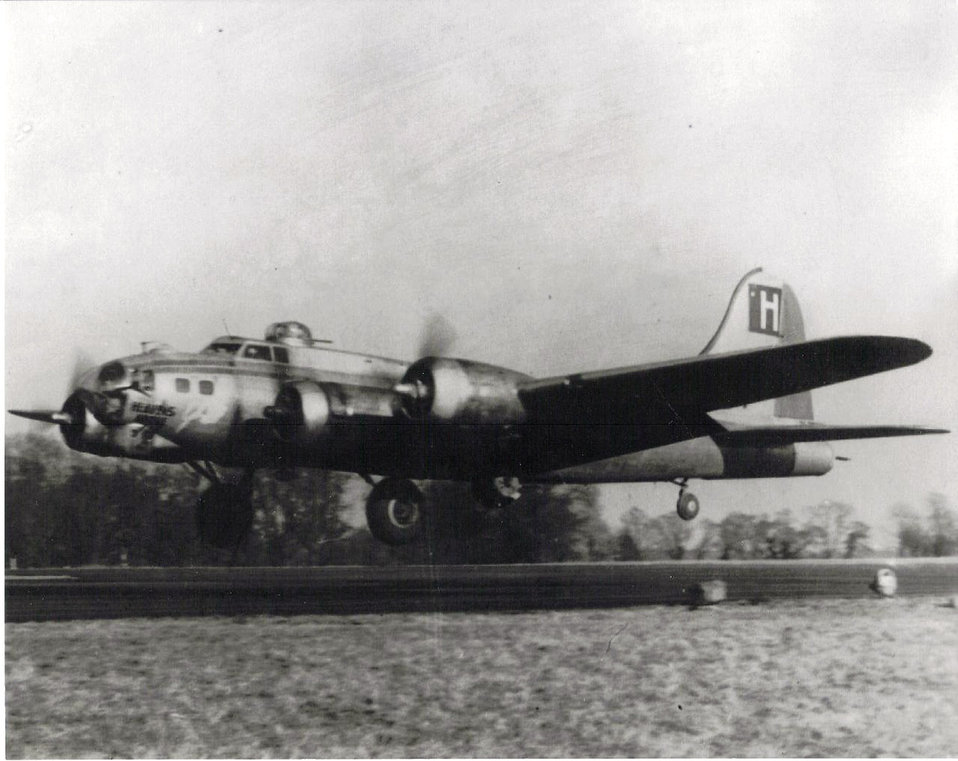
Airman finds piece of family history at Lackland